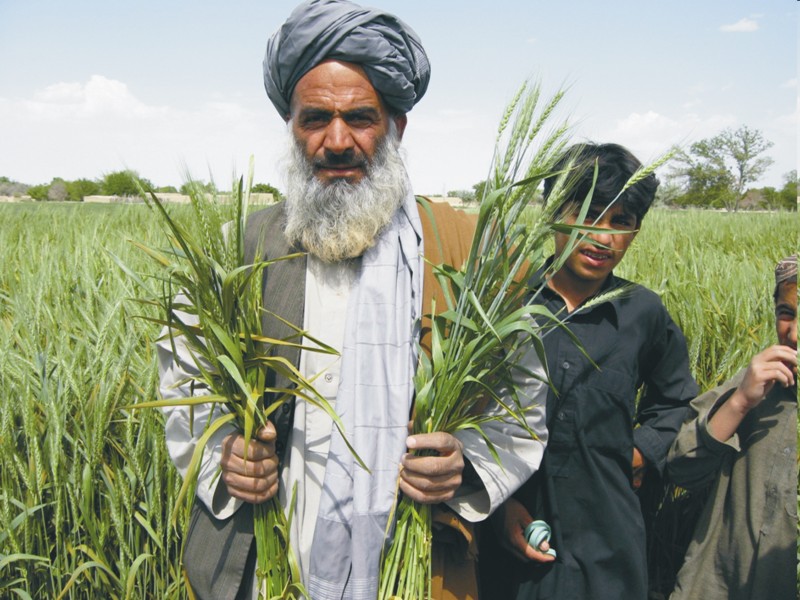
AG Balochistan Agriculture 2